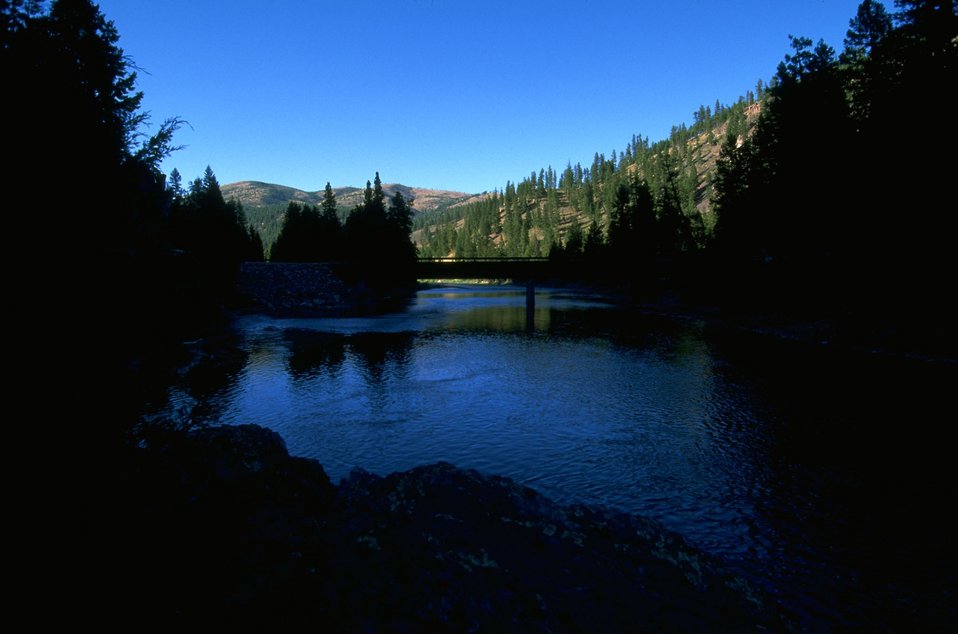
Blackfoot River